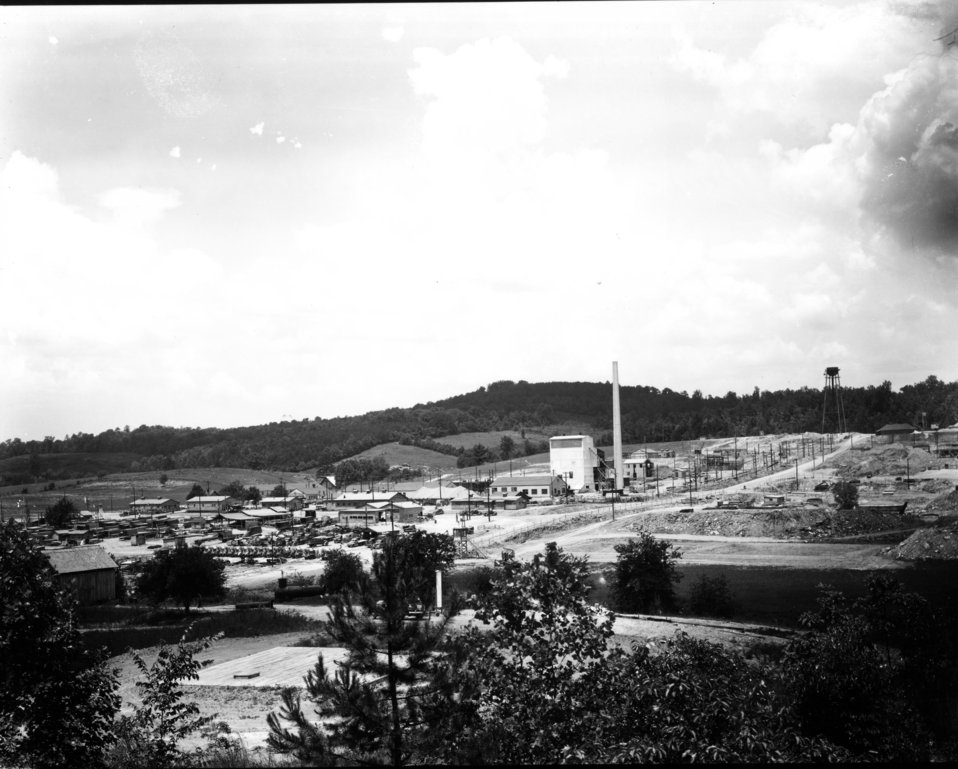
X-10 at Oak Ridge